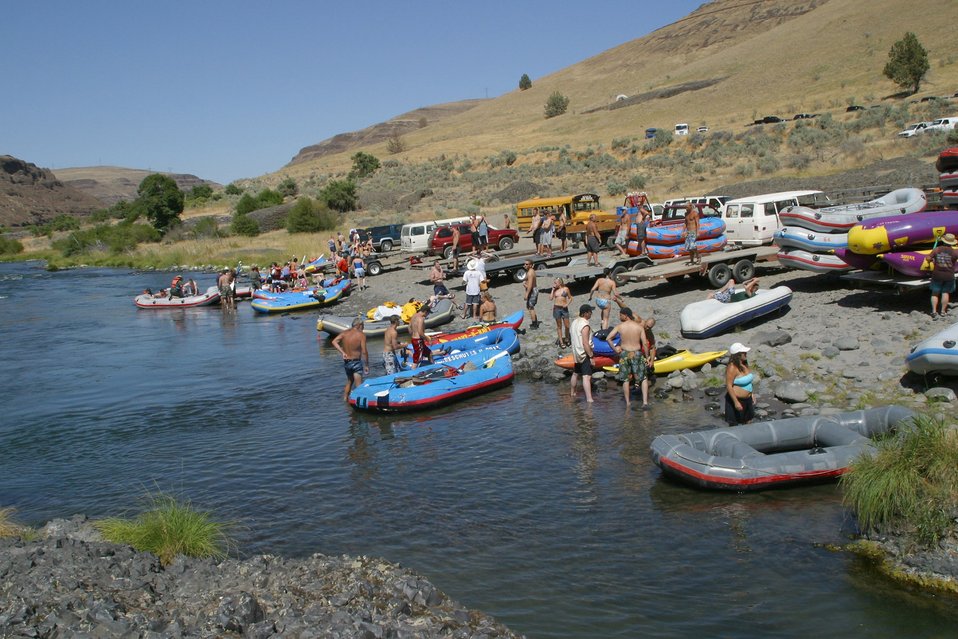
Sandy Beach is the last take out before Sherars Falls. All watercraft must exit the river!